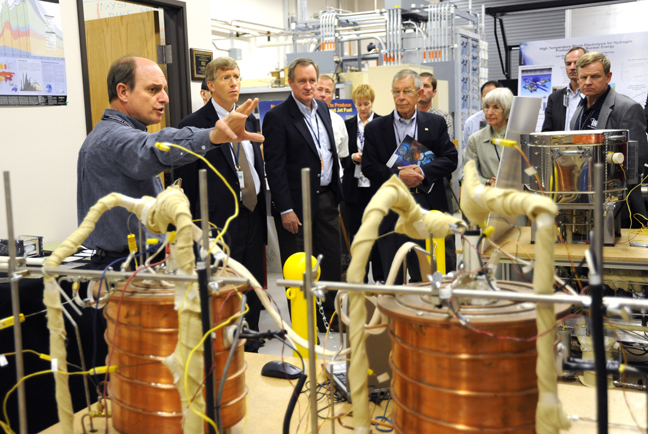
P-6251-11 72dpi

INL researcher Steve Herring walks Idaho Sen. Mike Crapo (right), Deputy Secretary Poneman and Ohio Sen. George Voinovich (left) through his work.